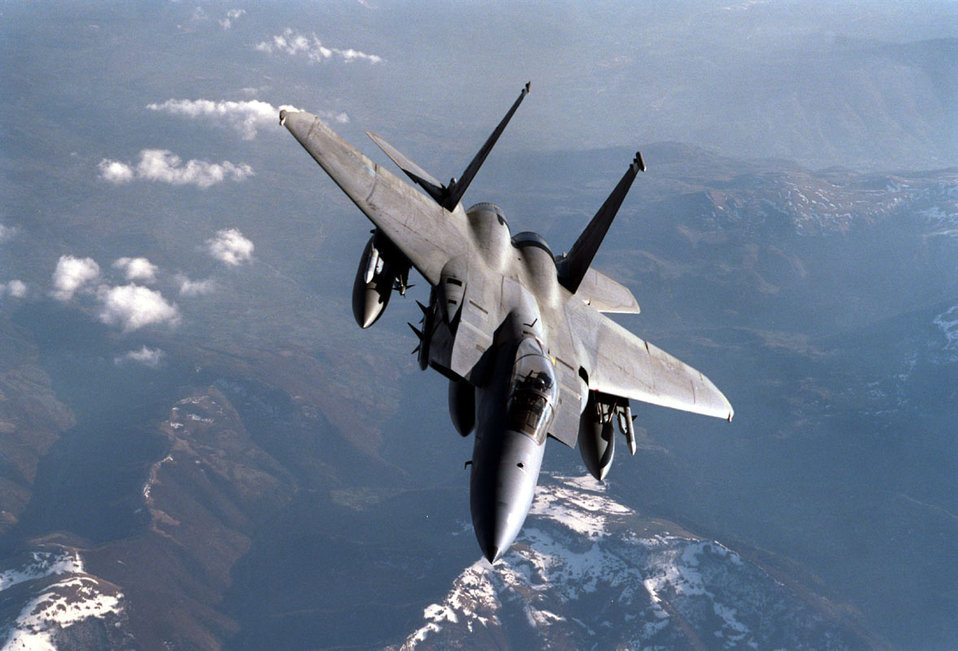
Armed Eagle

OPERATION ALLIED FORCE -- An F-15C Eagle from the 48th Fighter Wing, Royal Air Force Lakenheath, England, breaks away from a 100th Air Expeditionary Wing KC-135R Stratotanker from Royal Air Force Mildenhall, England. Armed with AIM-7 Sparrow missiles on the fuselage, AIM-9 Sidewinder missiles on the inboard wing pylon, and Advanced Medium Range Air-to-Air Missiles on the outboard wing pylon, the Eagles are flying Combat Air Patrol missions to maintain air superiority and protect Operation Allied Force aircraft.